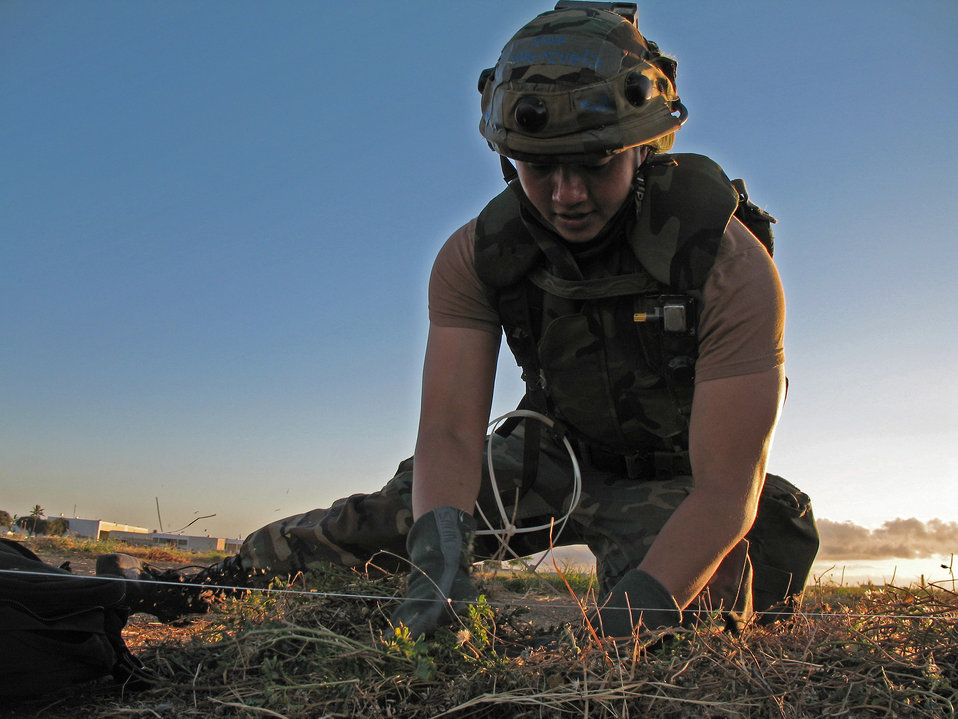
Hawaii air traffic controllers train to fight

Senior Airman Julius Valenzuela buries a glow stick attached to fishing line as part of an exercise at Naval Station Barber's Point, Hawaii, on July 25. The glow stick serves to alert scouts of night intruders. Airman Valenzuela is with the Hawaii Air National Guard's 297th Air Traffic Control Squadron.